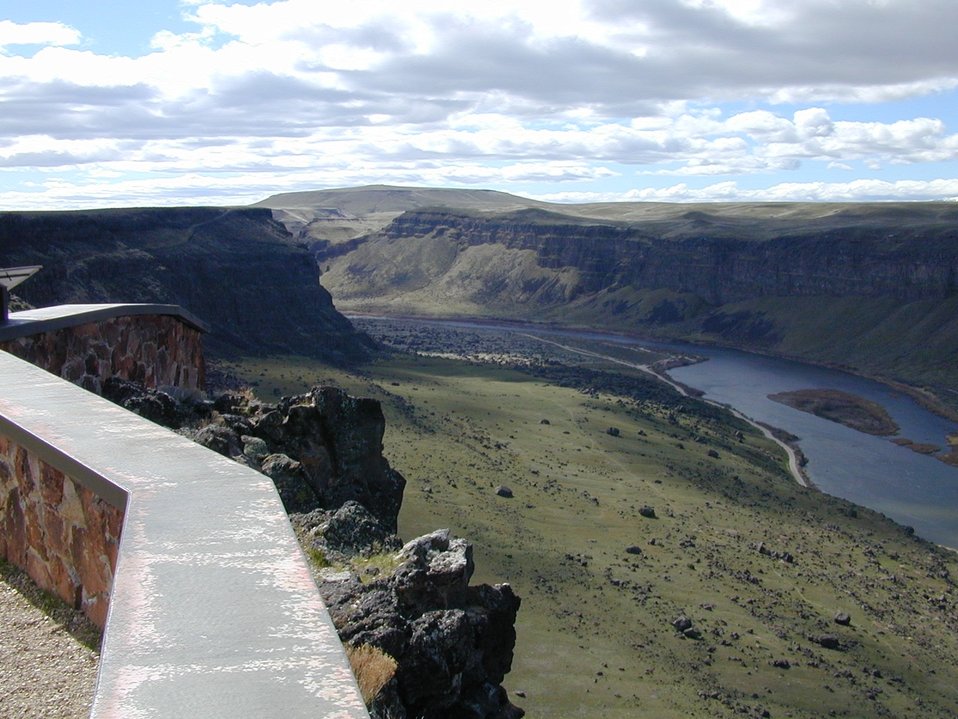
Snake River Birds of Prey National Conservation Area Lower Snake River District LSRD Snake River Canyon Scenic